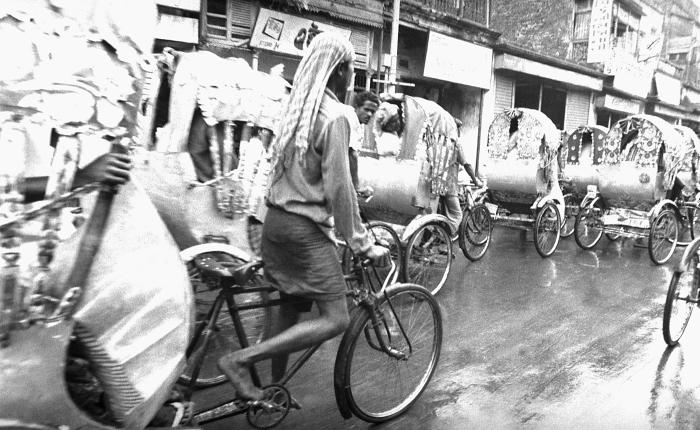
This Bangladesh town street scene depicted a roadway crowded with rickshaws transporting passengers throughout the town. This photograph provided by Dr. Stan Foster, and captured by Pierre Claquin, M.D., B.A.C., who at the time was a member of the World Health Organization's Smallpox Eradication Program. It was part of a series photographed by former E.I.S. officer, Stanley O. Foster M.D., M.P.H., and was one of a series entitled 'The Story of One Smallpox Jeep', which depicted the travails faced by the jeep, and its occupants of public health practitioners, as they road through the Bangladesh countryside in an attempt to eradicate smallpox from the country.